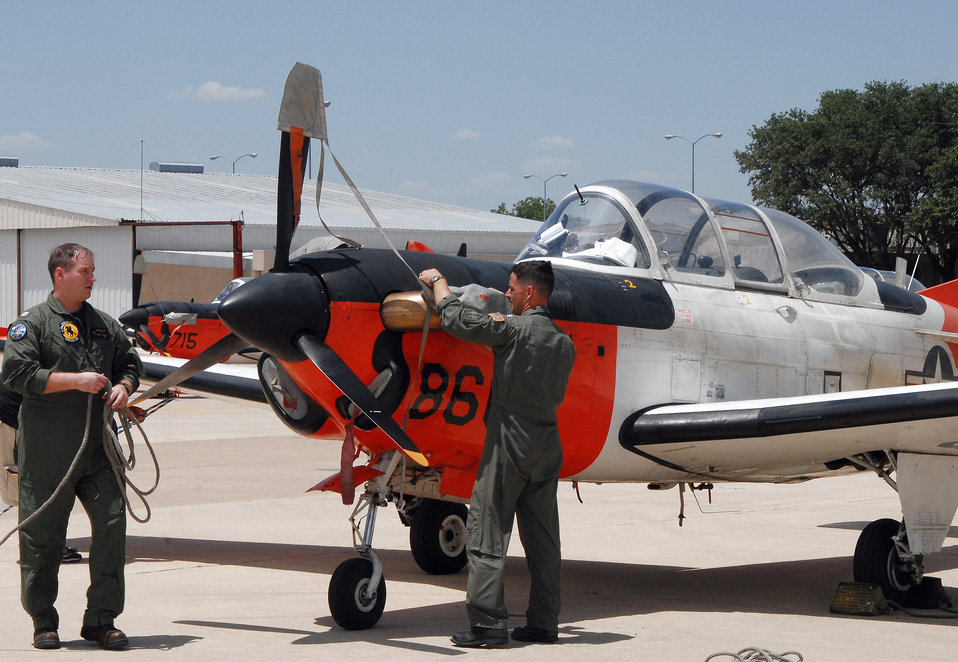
Airmen ready for Dolly's aftermath

Navy pilots bed down a T-34 trainer aircraft July 22 at Mathis Field Airport in San Angelo, Texas. Twenty-three aircraft were sent from Corpus Christi Naval Air Station to Mathis Field, their designated inland airport, to escape potential damage from Hurricane Dolly.